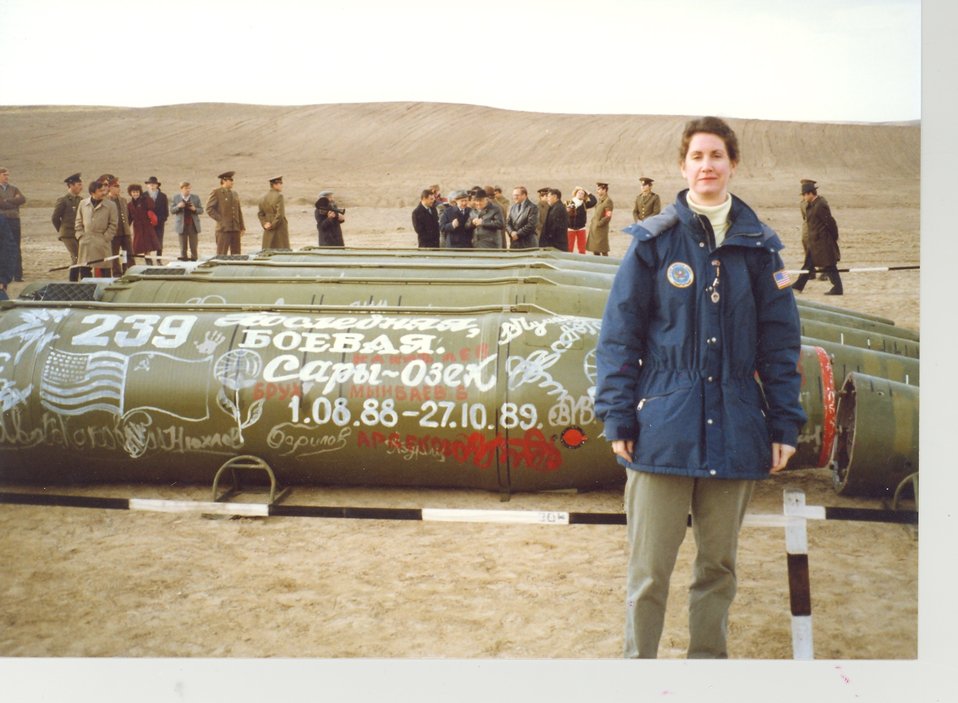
Ambassador Malloy Witnesses the Elimination of the Last Soviet Short-Range Missiles Under the INF Treaty

Ambassador Eileen Malloy, chief of the arms control unit at the U.S. Embassy in Moscow, Russia, is pictured at the destruction site in Saryozek, (former Soviet Union) Kazakhstan, where the last Soviet short-range missiles under the Intermediate-Range Nuclear Forces Treaty were eliminated in spring 1990. With the passage of the Rogers Act establishing the current merit-based, professional Foreign Service, the modern Foreign Service was created on May 24, 1924. On May 22, 2014, U.S. Secretary of State John Kerry delivered remarks at an event celebrating the 90th anniversary of the U.S. Foreign Service.